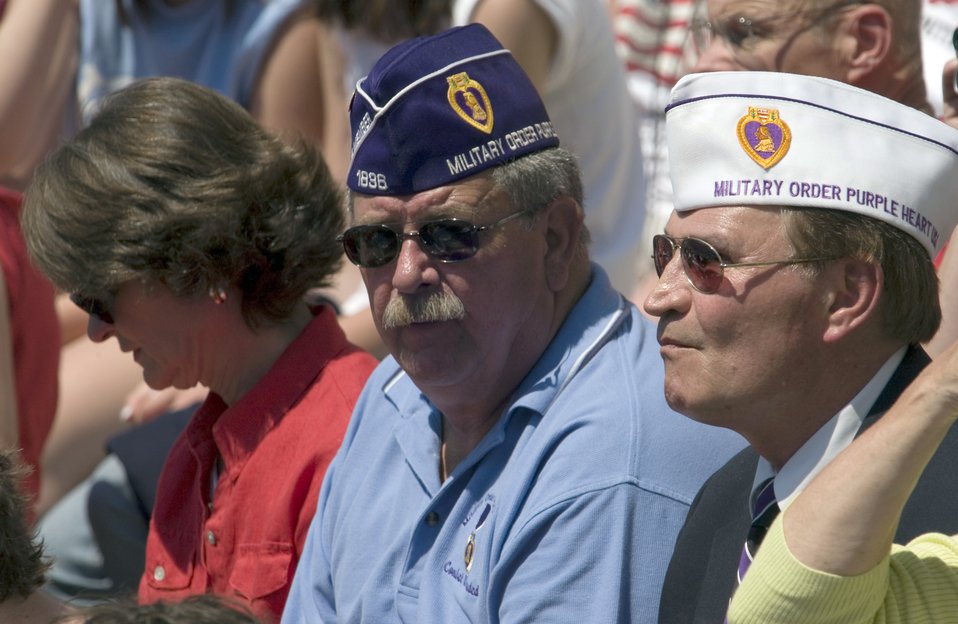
Veterans

WASHINGTON D.C. -- Military veterans from all branches of service will gather on Nov. 11 at the Tomb of the Unknown Soldier at Arlington National Cemetery for a wreath laying ceremony, then move to the ampitheater for a commemoration in honor of Veteran's Day.